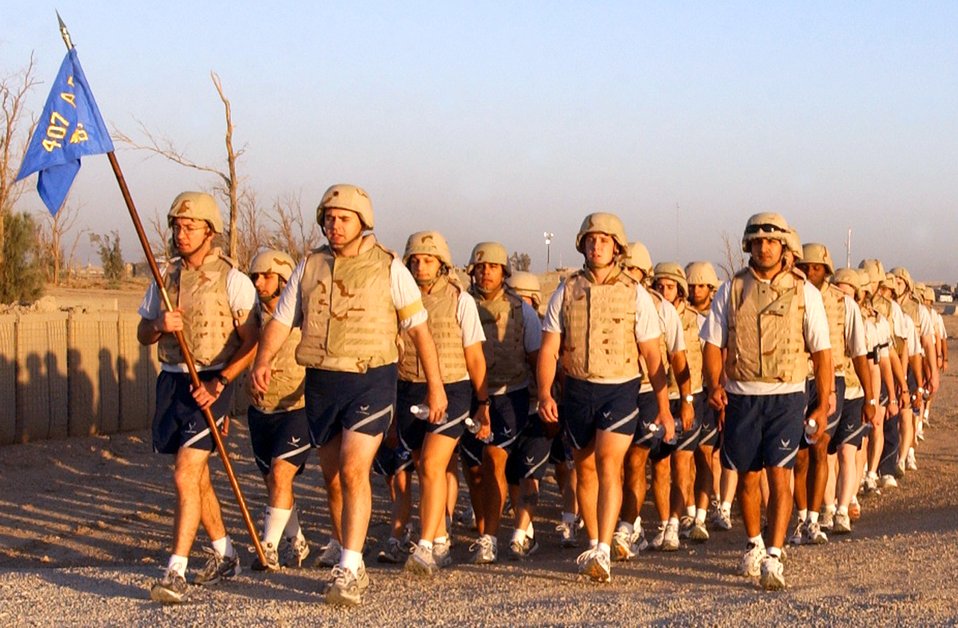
PT, desert-style

Airmen from the 407th Expeditionary Communications Squadron at Ali Base, Iraq, are led by their commander, Maj. Stephen Sweeney (front), and their first sergeant, Master Sgt. Randy Herauf (far left), in a flight march after a morning physical training session on Thursday, June 1, 2006.